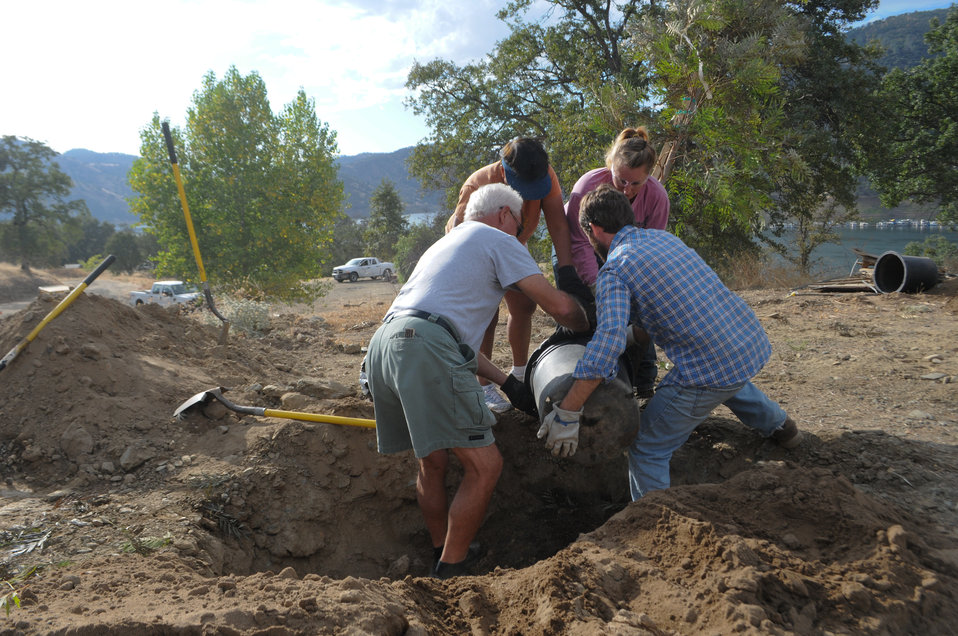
National Public Lands Day at Pine Flat Lake

Volunteers plant trees at Pine Flat Lake near Sanger, Calif., Sept. 24 in celebration of National Public Lands Day. More than 60 volunteers turned out to help plant trees and build a new sand volleyball court and horseshoe pits at the park. Pine Flat was one of seven U.S. Army Corps of Engineers Sacramento District recreation parks that participated in the event.